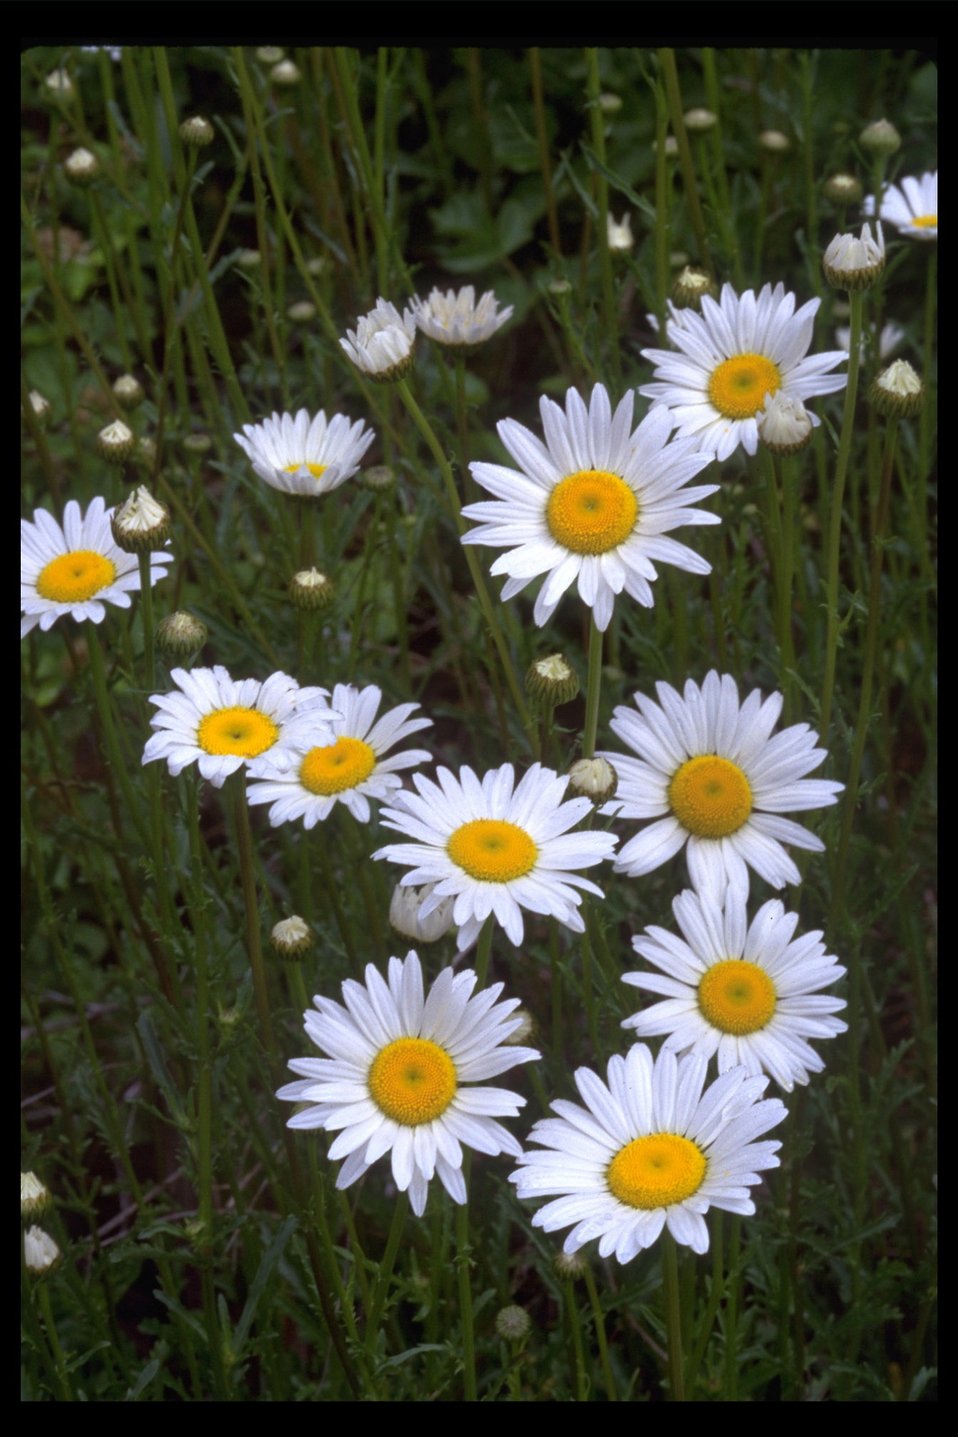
Close up picture of the Oxeye Daisy (Chrysanthemum leucanthemum) along the West Fork Trail Creek.